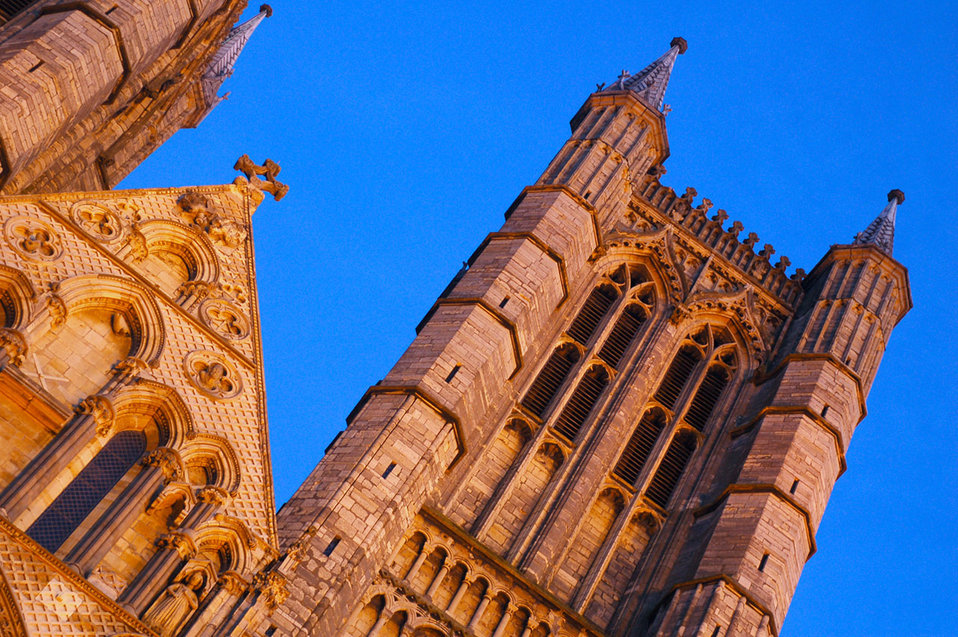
Lincoln cathedral

Cathedral in lincoln, sunset light.